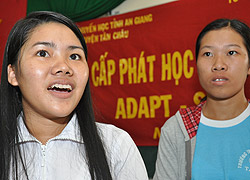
Supporting Girls Education in Vietnam